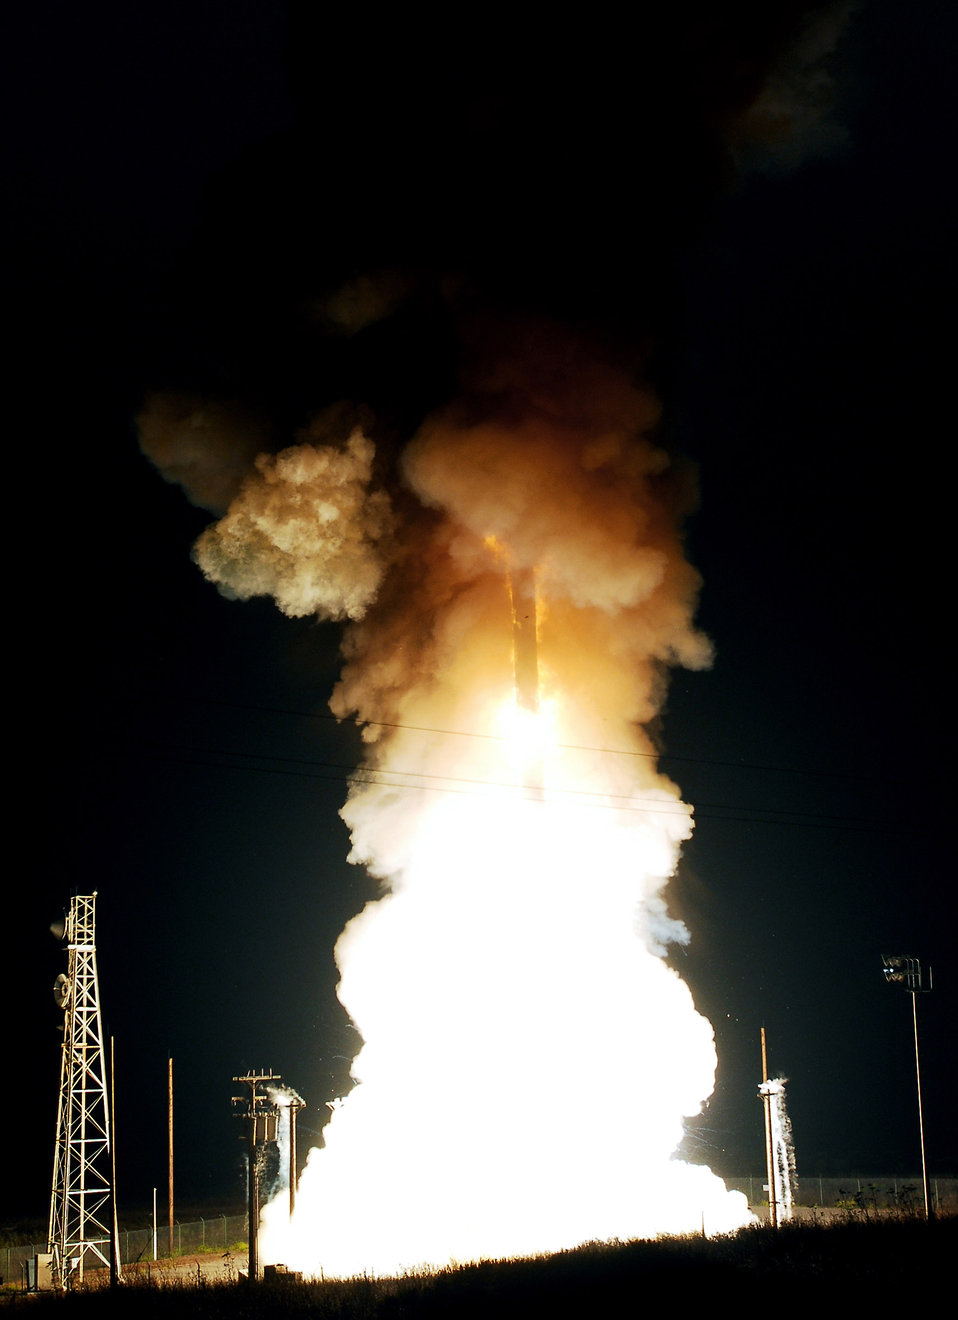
Missile successfully launches from Vandenberg

A Minuteman III intercontinental ballistic missile successfully launches at 1:01 a.m. Aug. 13 from Vandenberg Air Force Base, Calif. The missile was configured with a National Nuclear Security Administration, or NNSA, test assembly in which three unarmed re-entry vehicles traveled approximately 4,190 miles to their pre-determined targets in the Pacific Ocean.